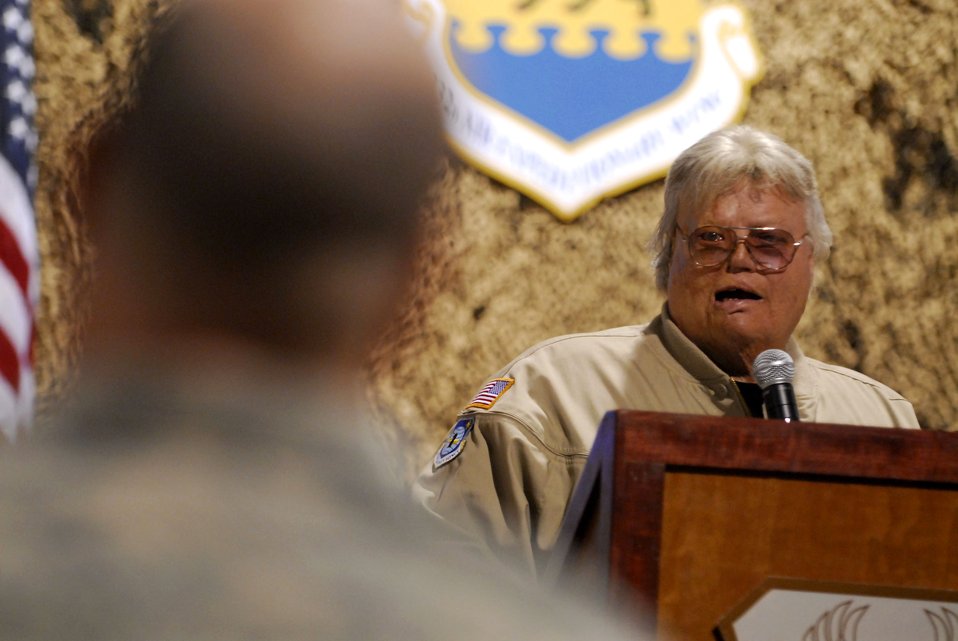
Veteran hope

Dave Roever shares his personal experiences about overcoming adversity following severe injuries from a phosphorous grenade with Airmen and Soldiers Nov. 26 at Balad Air Base, Iraq. Mr. Roever, a disabled Vietnam War, veteran told military members he understands the difficulties they face serving in a time of war and extended the support of the American people.